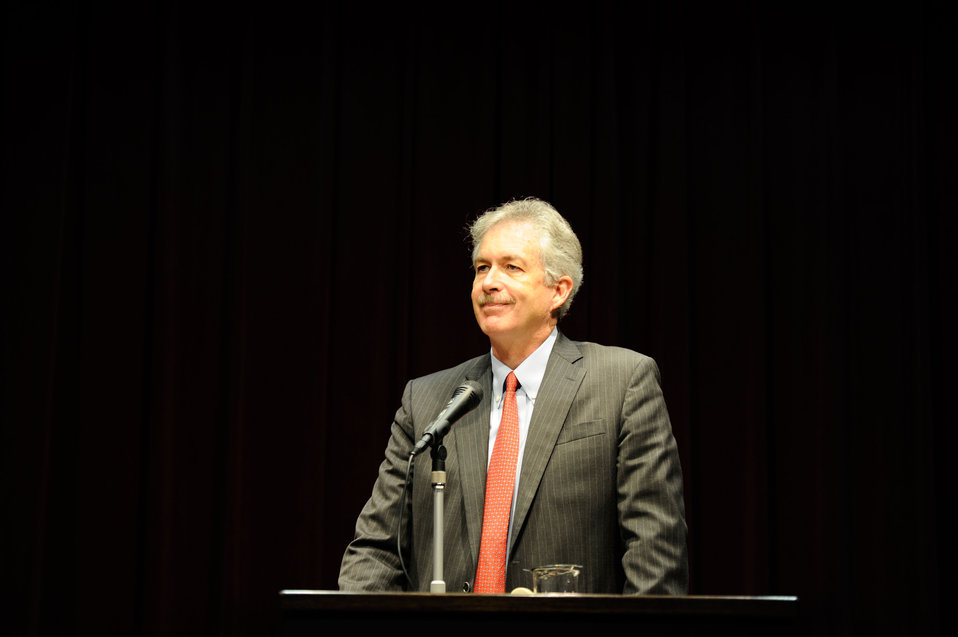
Deputy Secretary Burns Discusses Increasing U.S. Engagement in the Asia Pacific Region

U.S. Deputy Secretary of State William Burns discusses increasing U.S. engagement in the Asia Pacific region, including establishing a positive relationship with China, working towards North Korea's denuclearization, and building a new regional architecture, at the University of Tokyo in Japan on October 27, 2011.